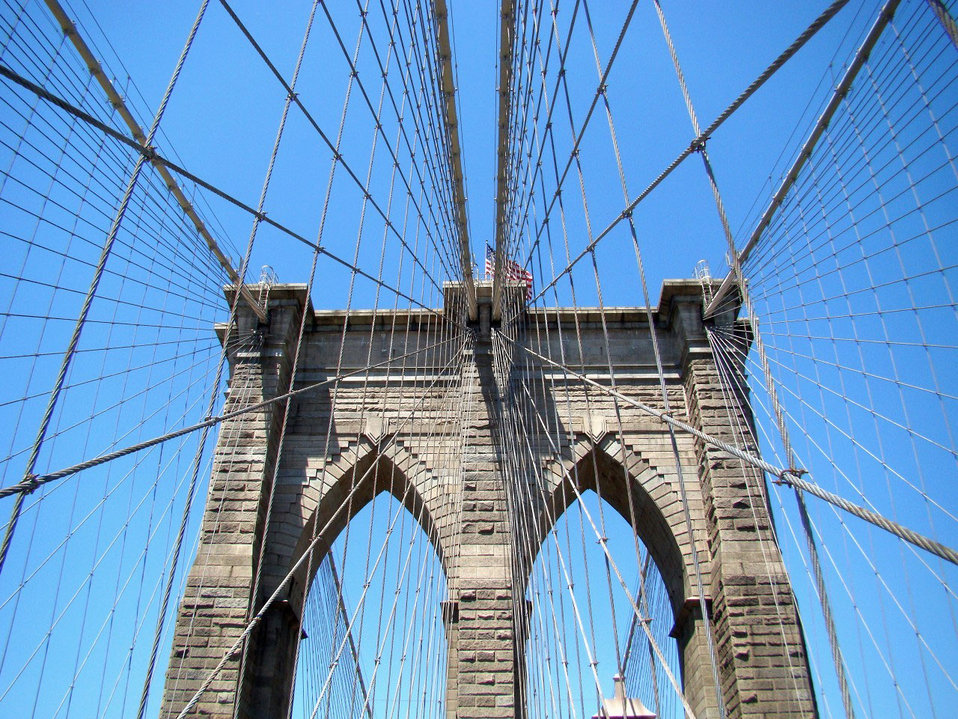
Bridge tower

Brooklyn bridge tower detail.